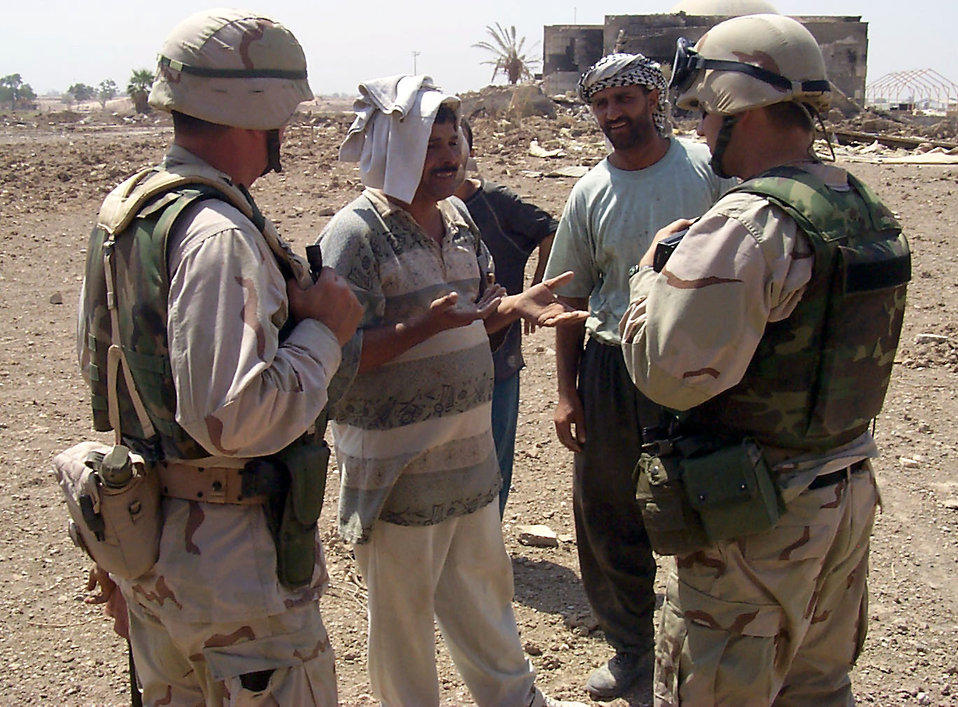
He speaks the lingo

BAGHDAD, Iraq -- Linguist 2nd Lt. Anthony Langley (far right) explains the Combined Weapons Effectiveness Assessment Team mission to Iraqis.